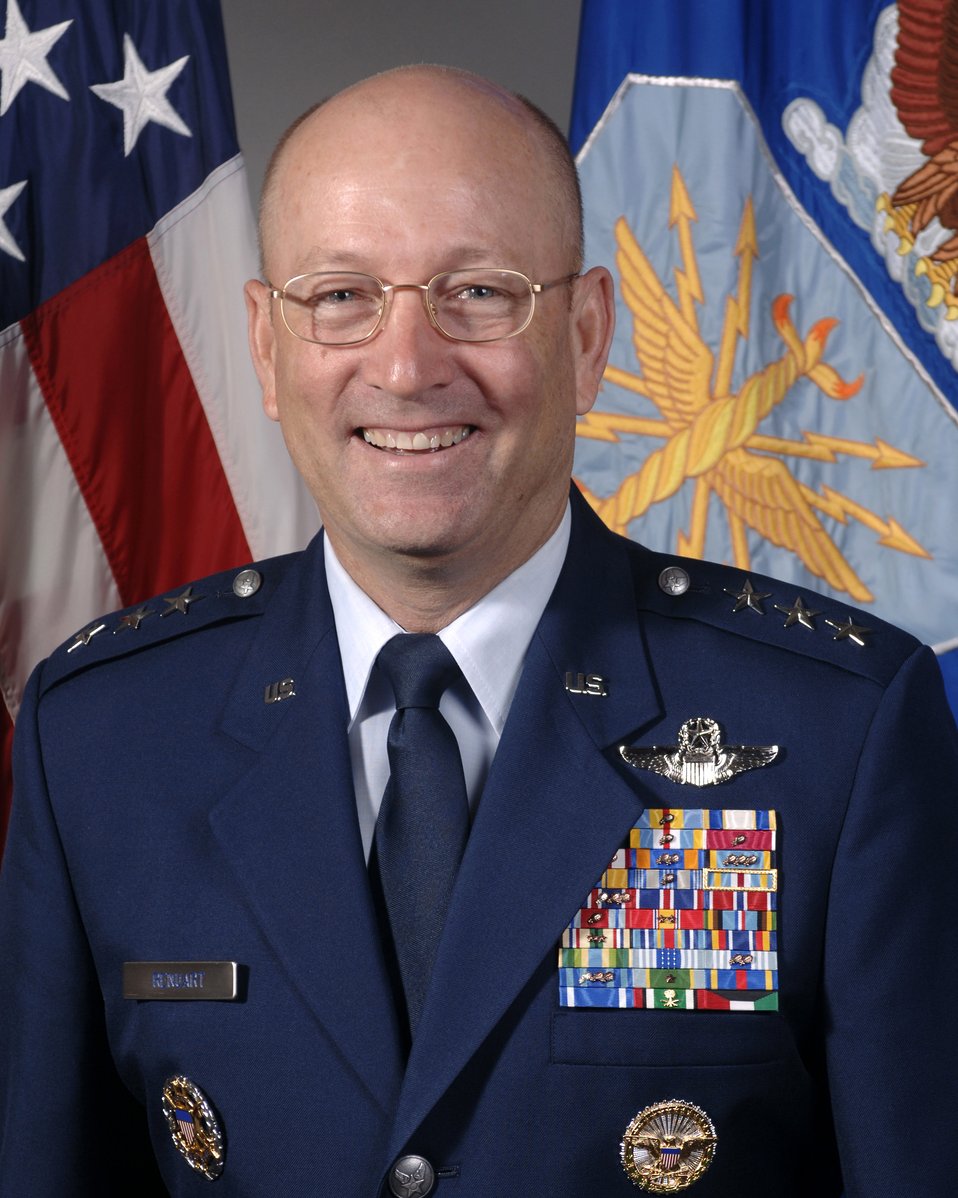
Lt. Gen. Victor E. Renuart Jr.

Air Force Lt. Gen. Victor E. Renuart Jr., is the president's nominee to lead U.S. Northern Command and North America Aerospace Defense Command.